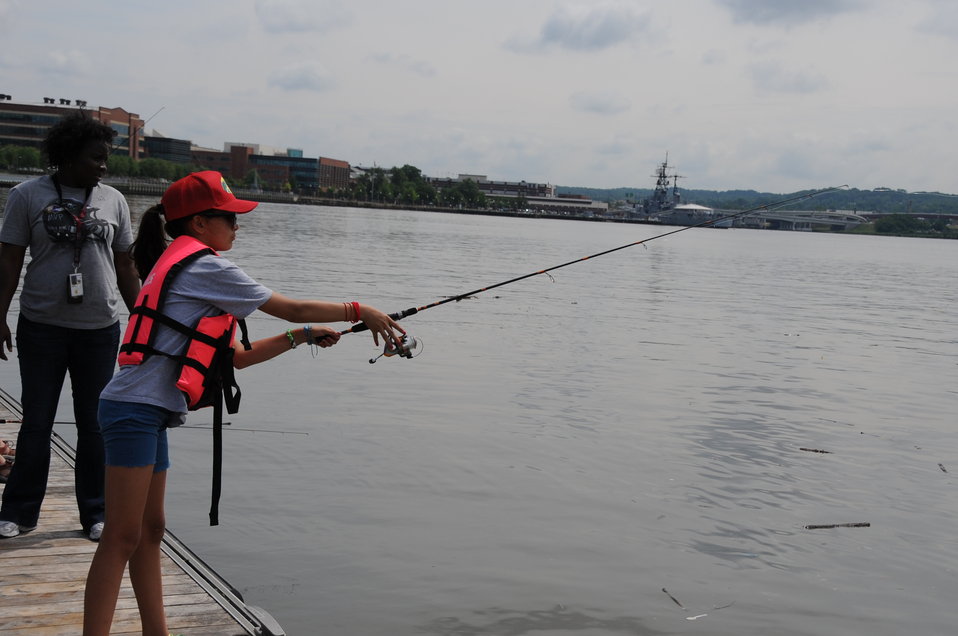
2013 National Fishing and Boating Week

Local students prepare to enjoy fishing at the annual kick-off of National Fishing and Boating Week on the Anacostia River in Washington D.C.